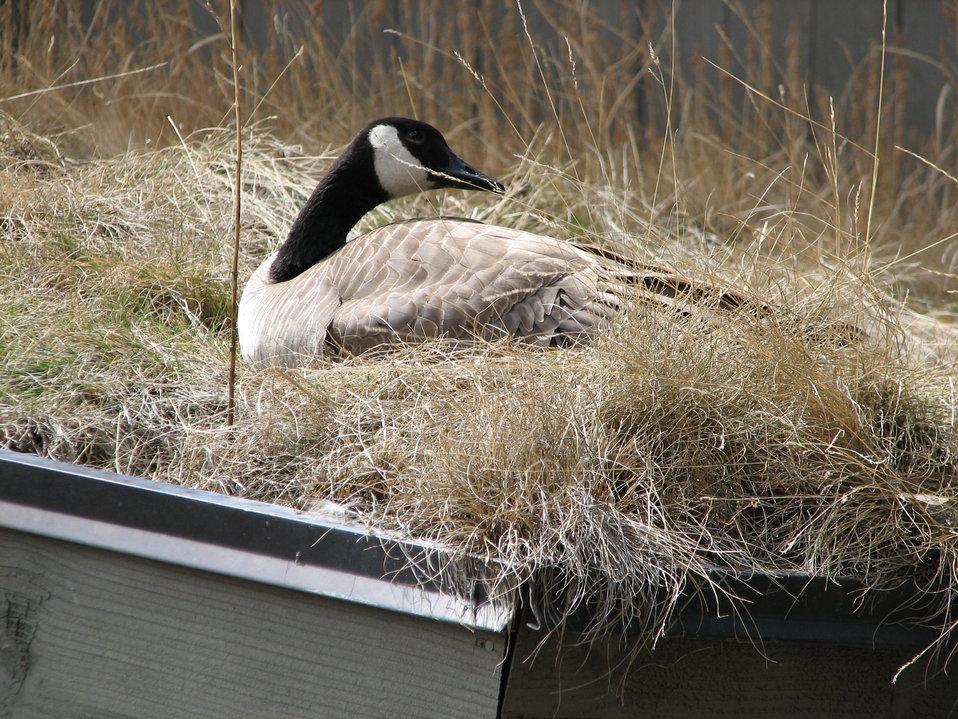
Goose Nesting on Grassy Roof

A Canada goose nests on the grassy roof of the Jackson Hole & Greater Yellowstone Visitor Center, located on the National Elk Refuge. Many Canada geese can be found nesting and raising their young in the immediate vicinity of the visitor center during the spring and early summer.